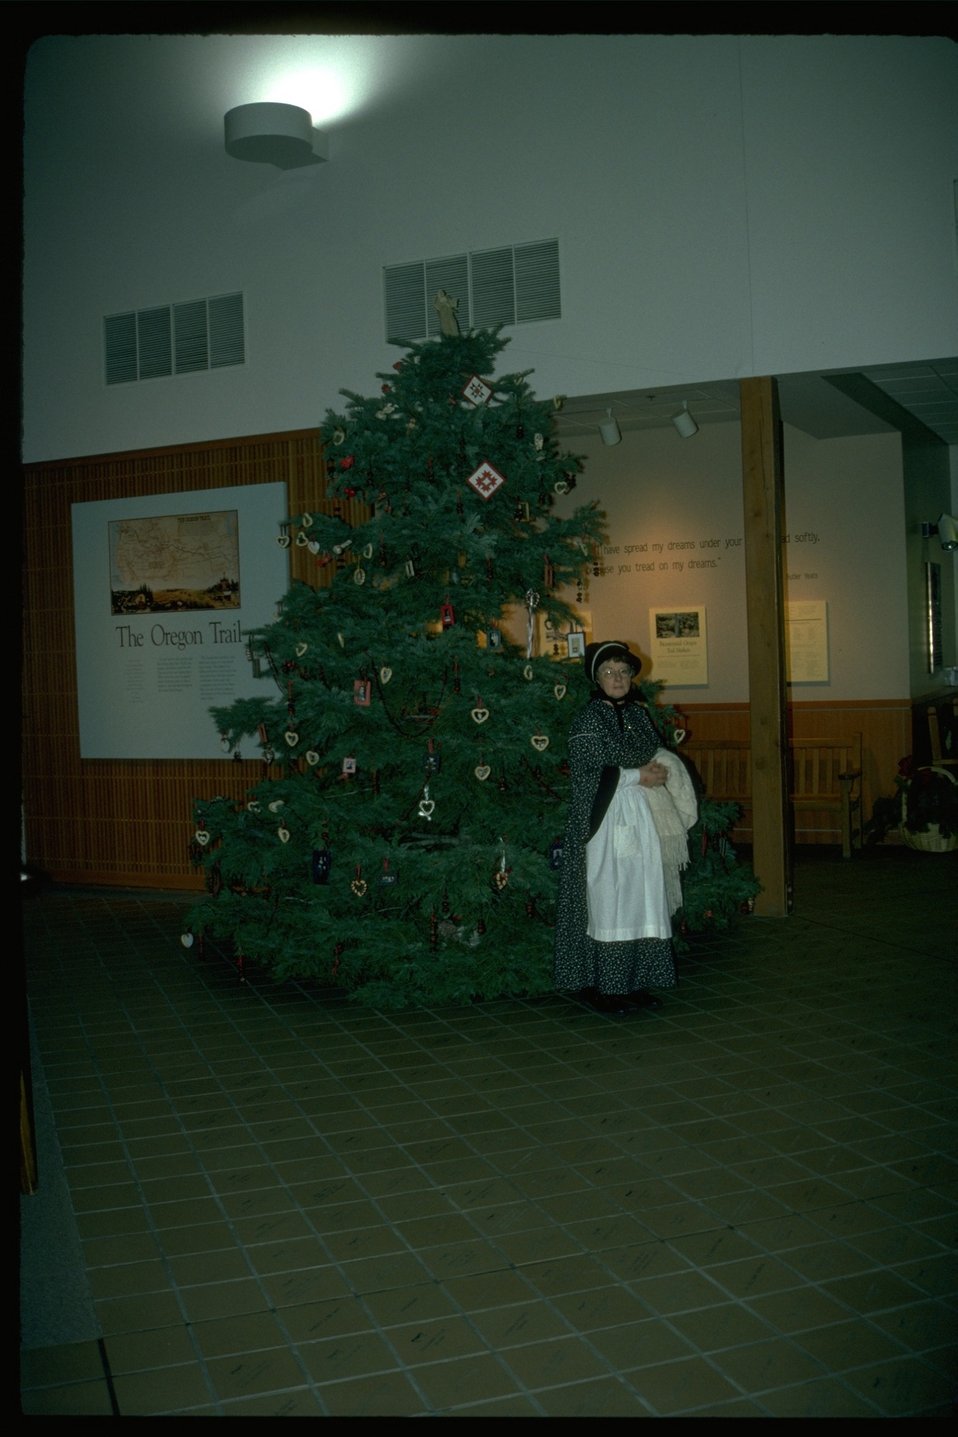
Volunteers decorating for holiday Open House at the NHOTIC.